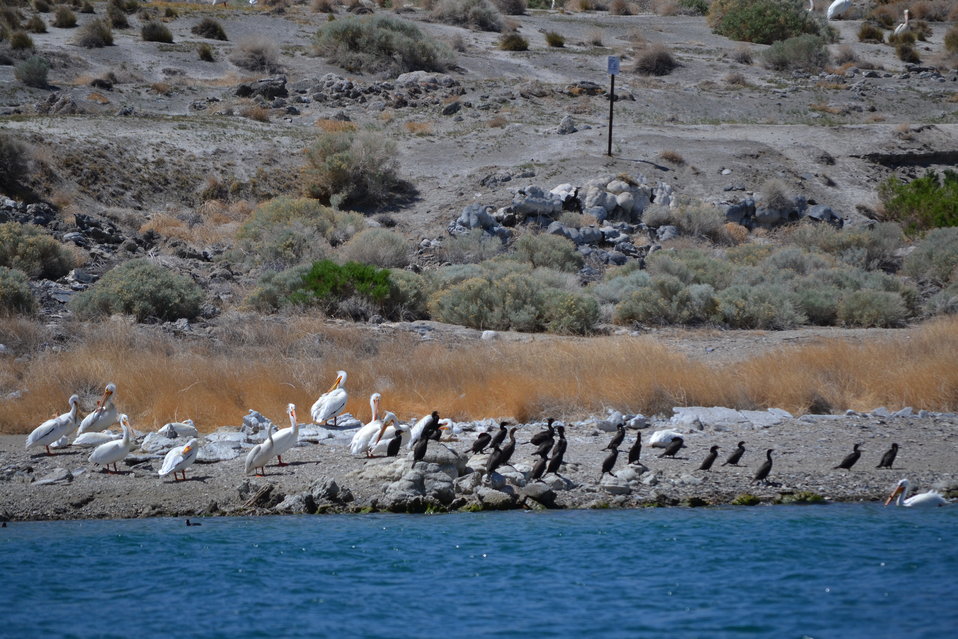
American white pelicans and other birds nesting

The island also provides nesting habitat for Double crested cormorants, California gulls and Great blue herons.